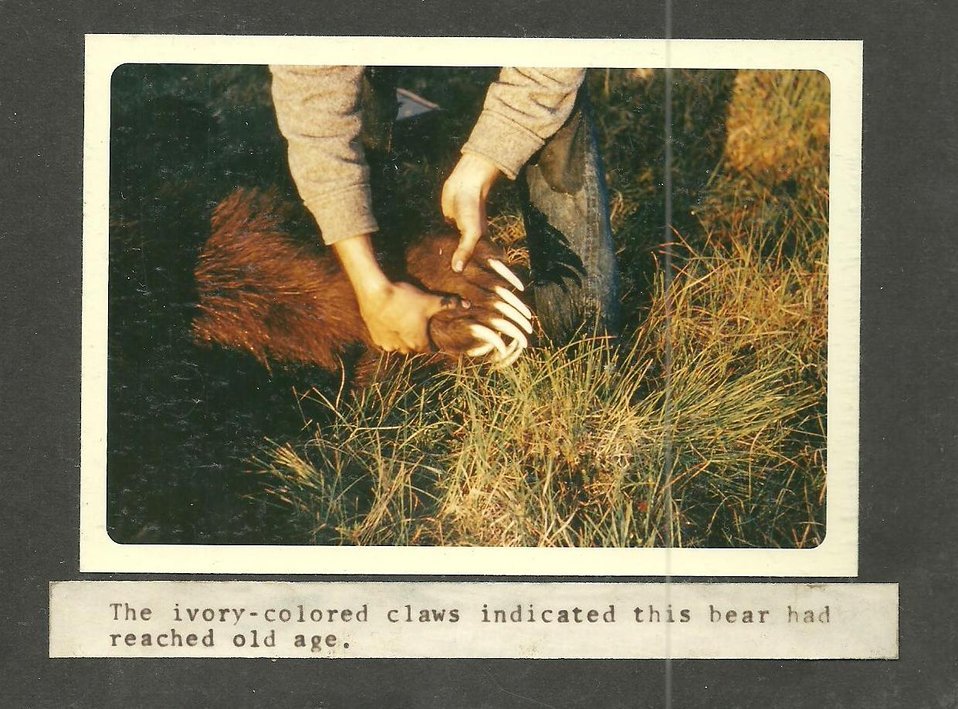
(1969) Ivory Nails

Credit: USFWS

Source and Contact: Kodiak National Wildlife Refuge